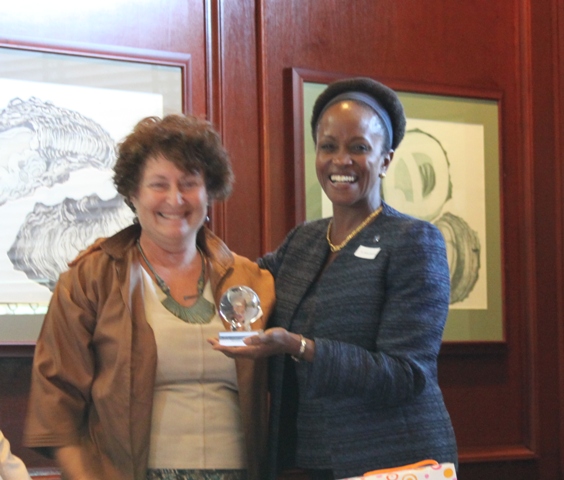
World Affairs Council of Las Vegas President Whiteside Presents a Gift to Assistant Secretary Brimmer

World Affairs Council of Las Vegas President Annette Whiteside presents a small globe as a gift of appreciation to Assistant Secretary for International Organization Affairs Esther Brimmer in Las Vegas, Nevada, on September 1, 2011.